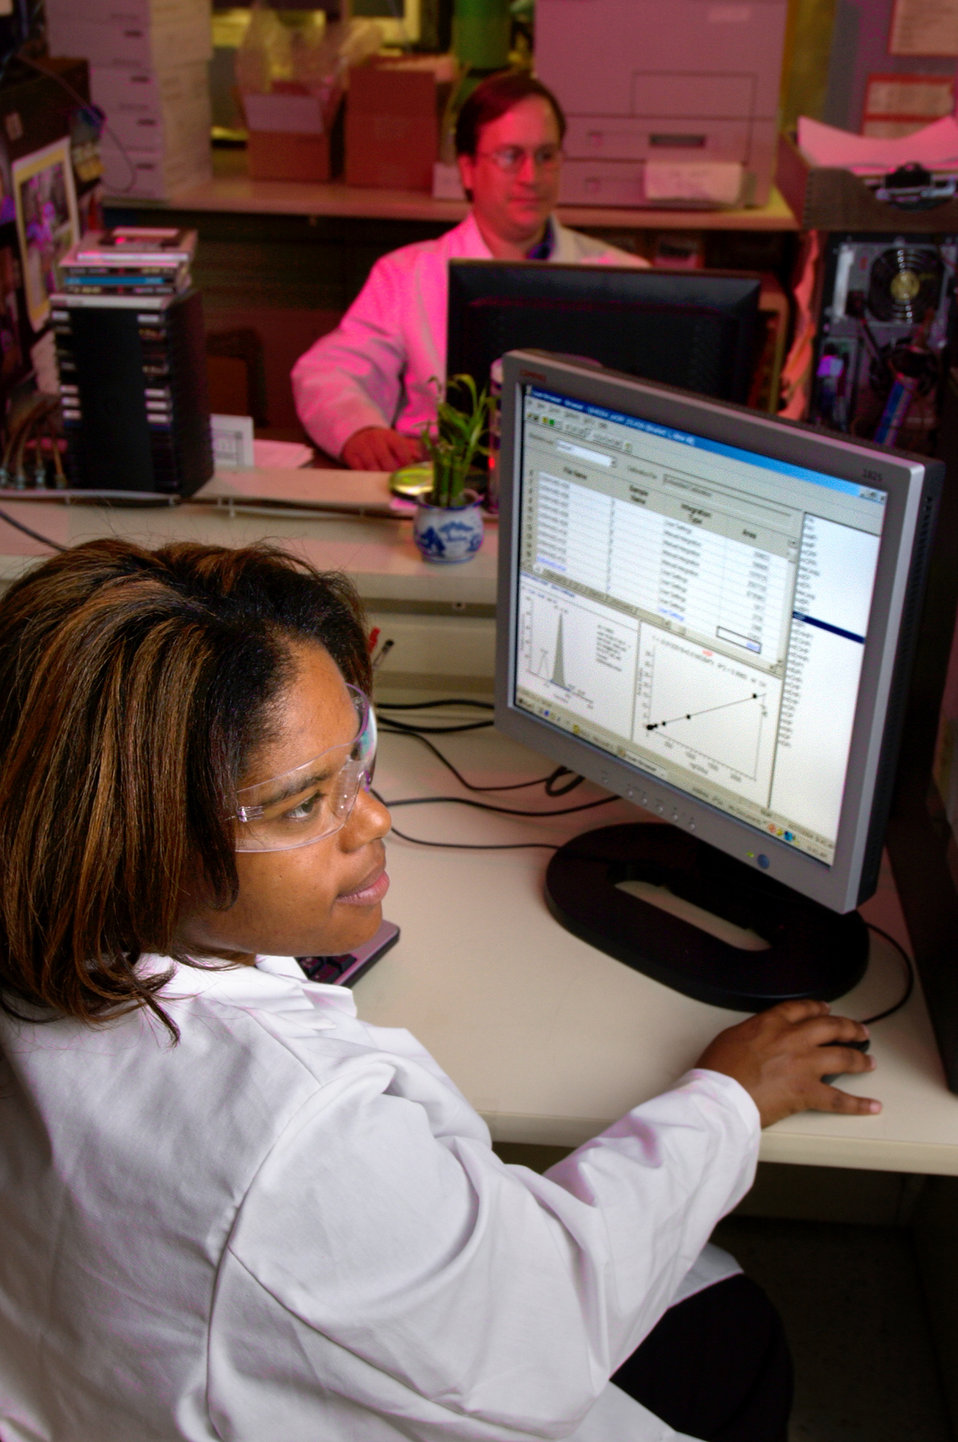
This photograph showed CDC chemists Arnetra Herbert (foreground), and Jim Preau (background) as they were processing data in the Personal Care Products Laboratory (PCPL) located in a CDC lab on the organization's Chamblee, Georgia campus.